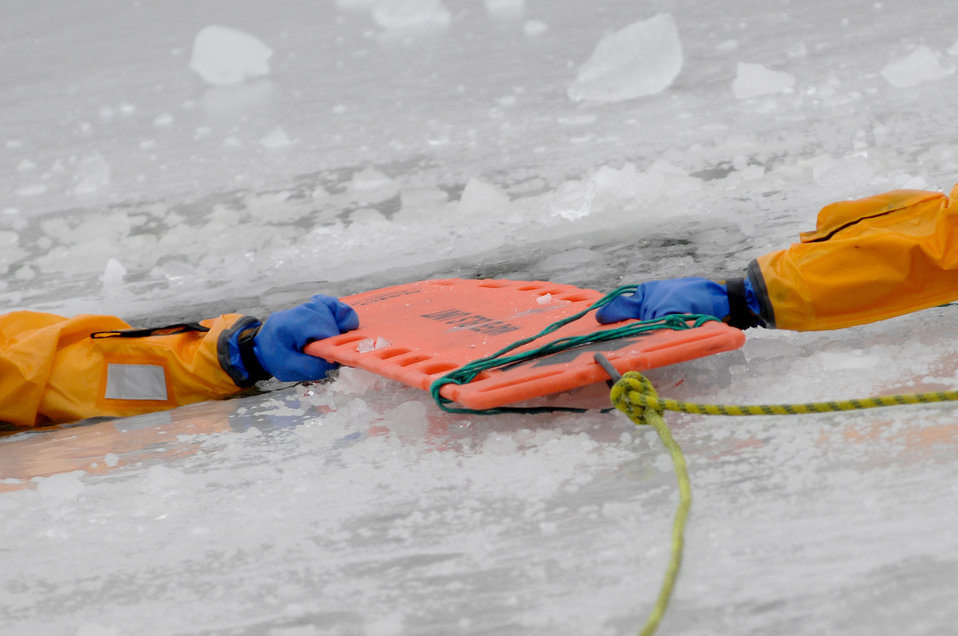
Ice rescue training

A life board is used for stabilization between two 509th Civil Engineer Squadron members as they escape from an ice hole Jan. 31, 2011, at Whiteman Air Force Base, Mo.